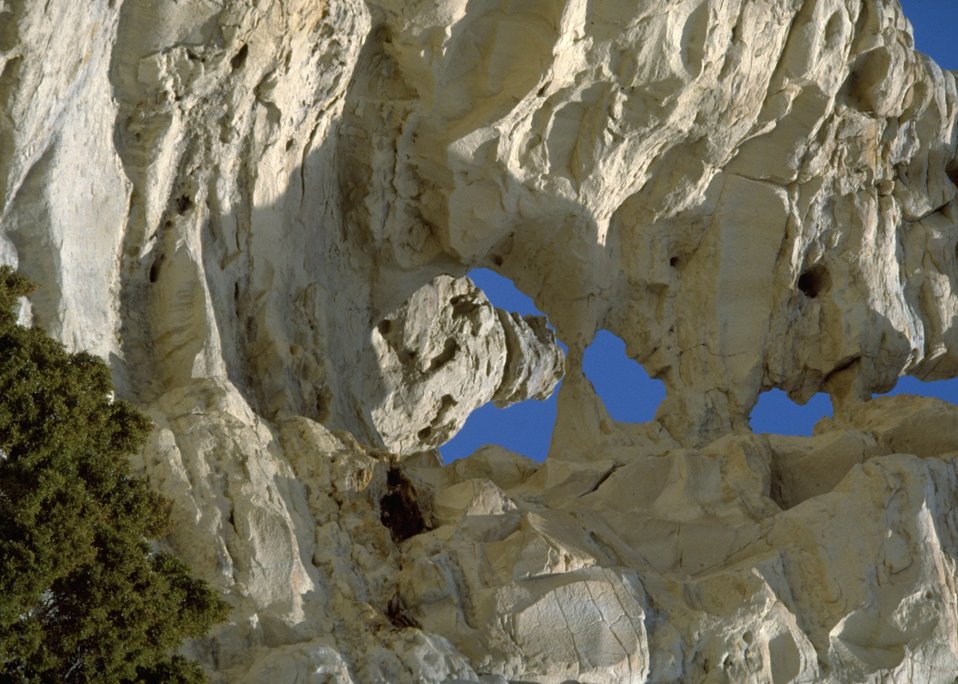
Scenic rock site.